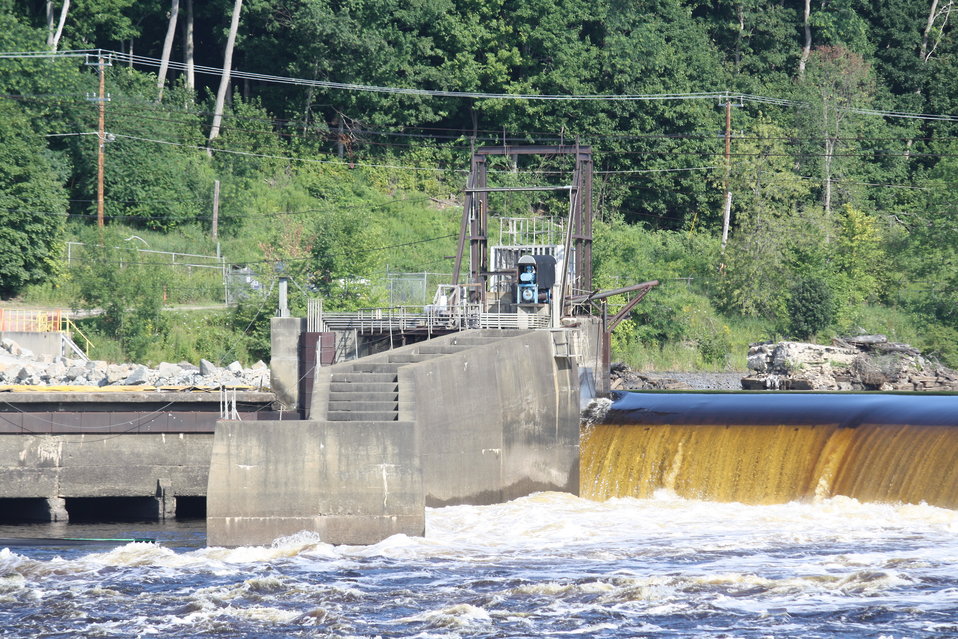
Veazie Dam Removal

A view of the Veazie Dam fish ladder and trap. Fish coming from the ocean or downstream are trapped at the fish ladder here and trucked upriver or to hatcheries.

This year, 372 Atlantic salmon were counted at this trap. In 2010, more than 1,300 salmon were counted here, and in 2012, more than 600 were counted.